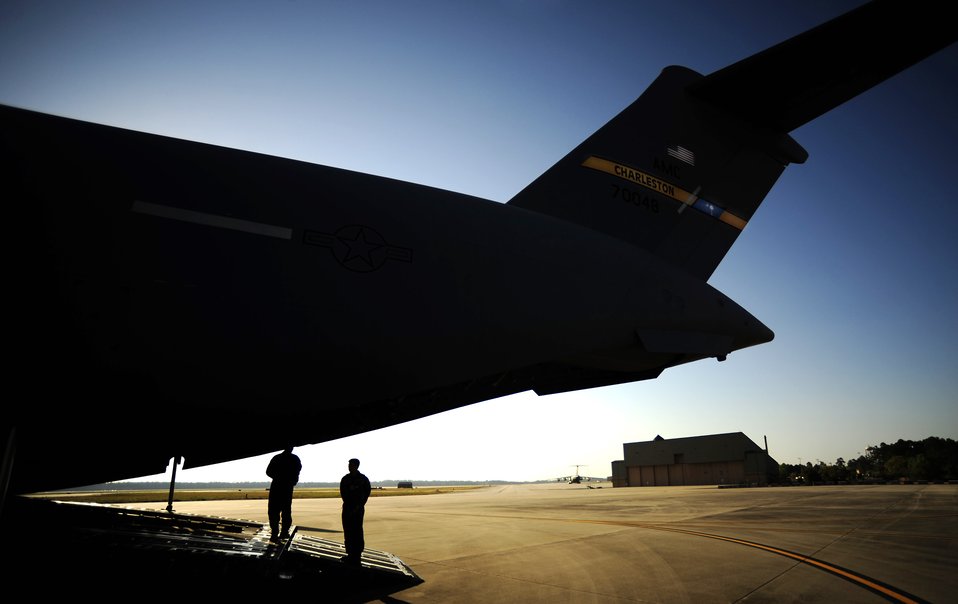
Charleston loadmasters prepare for training mission

Loadmasters perform pre-flight inspections on a C-17 Globemaster III during a local training mission over North Field near Charleston Air Force Base, S.C., April 5, 2010. The loadmasters are assigned to the 317th Air Reserve Squadron.